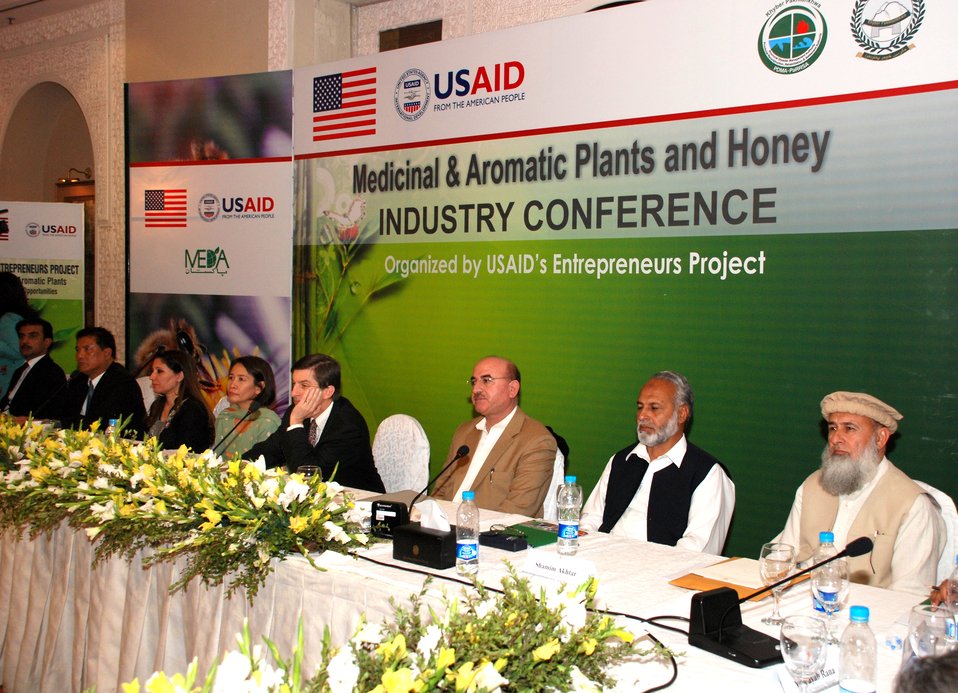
Industry Conference- Medicinal Plants and Honey

USAID Mission Director, Andrew Sisson sitting with the Provincial Minister for Enviornmnet & Forestry, KPK